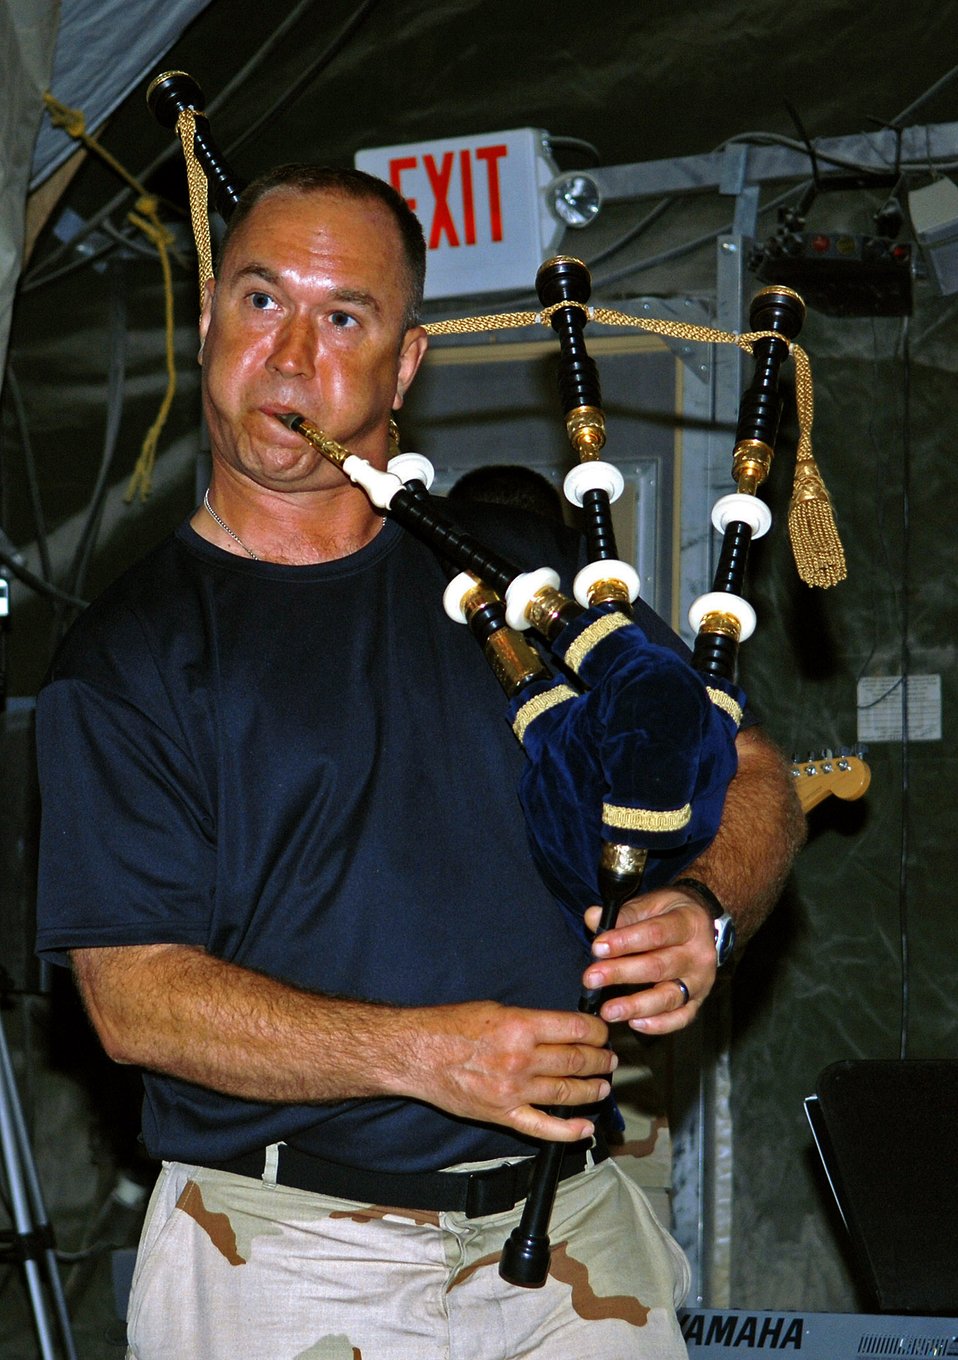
CENTAF Band performs unscheduled concert at Bagram

Master Sgt. Scott Gunn squeezes out a song on his bagpipes during an impromptu performance June 19 at Bagram Air Base, Afghanistan. Sergeant Gunn is the U.S. Central Command Air Forces Band tenor sax, bagpipe and guitar player. The band played for Airmen assigned to the 455th Air Expeditionary Wing at Bagram AB.